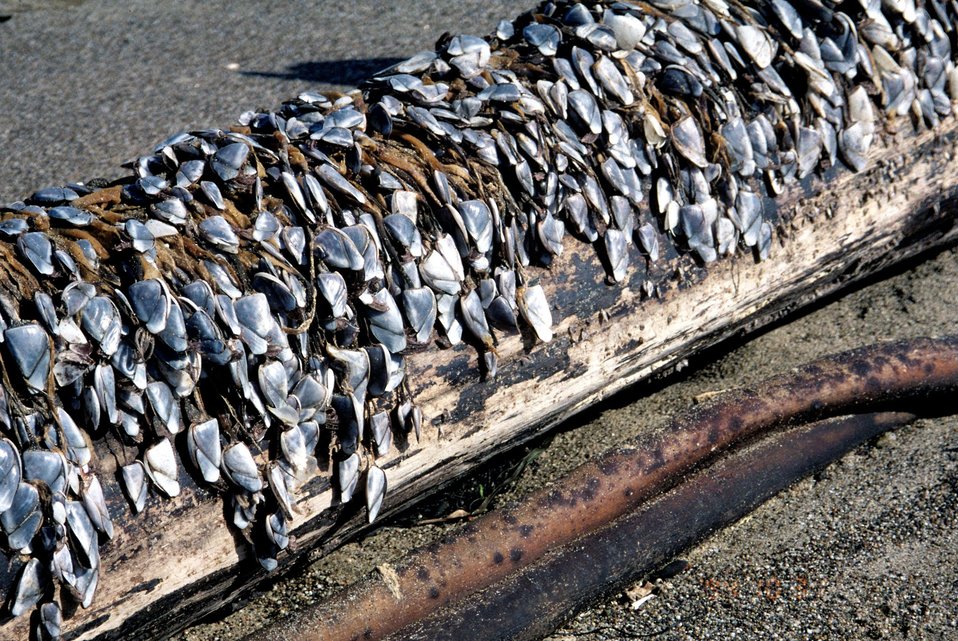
Point Reyes Great Beach south end. A log covered with gooseneck barnacles attesting to its longevity in the ocean.